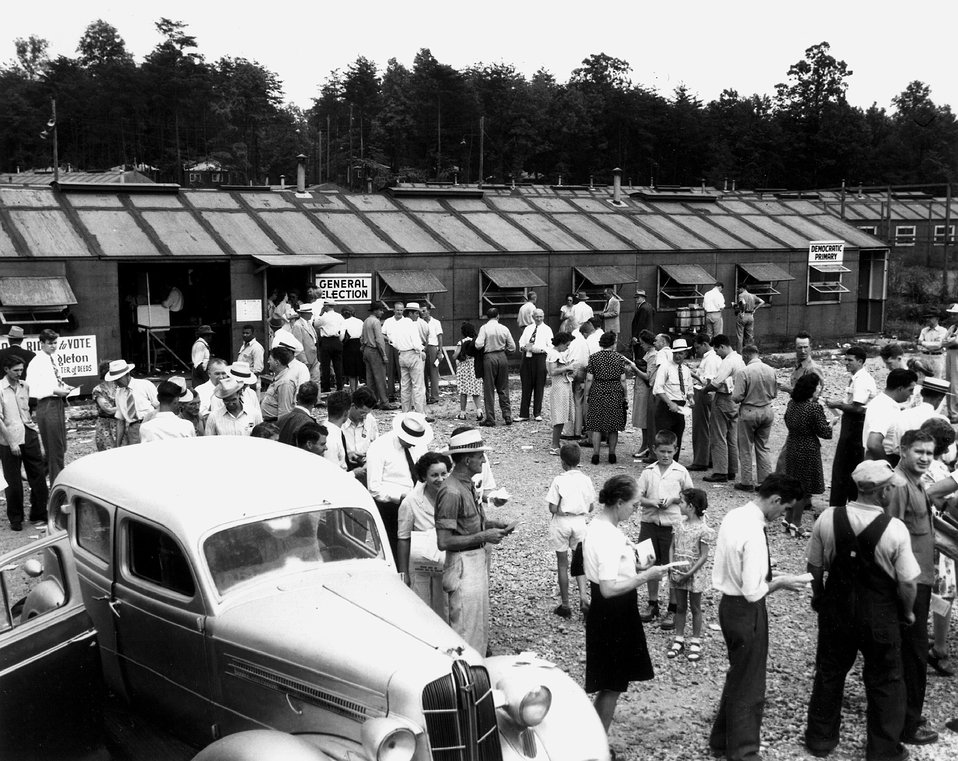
The first vote in the town of Oak Ridge, August 1946.